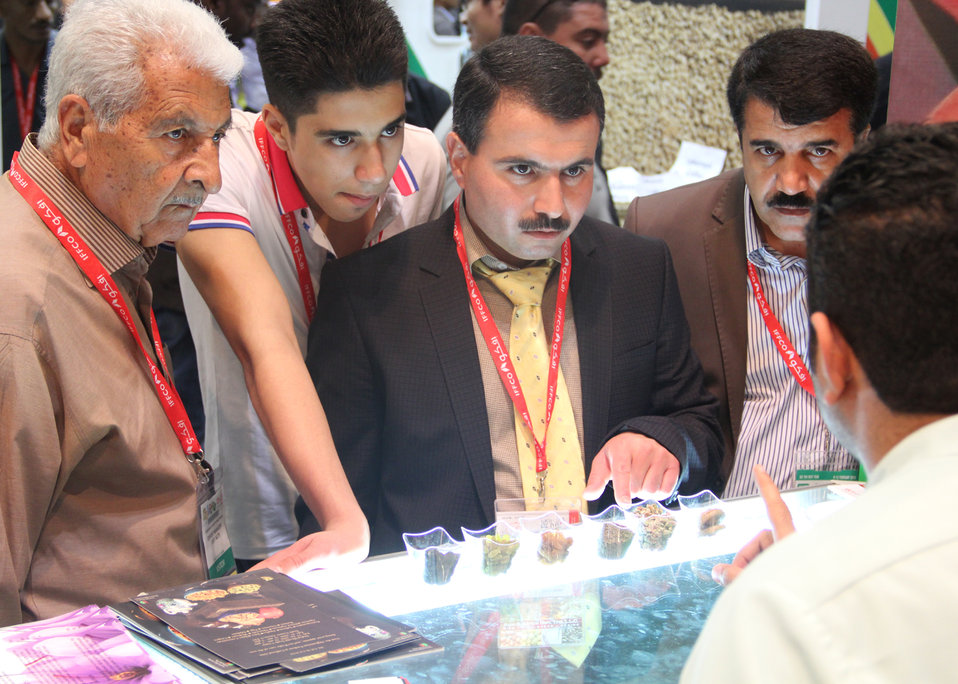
Visitors gather at the Afghanistan Pavilion at Gulfood to sample Afghanistan’s dried fruit and nuts, one of its main agricultural exports. Afghan traders signed deals worth more than $2 million dollars during the first two days of the exhibition.